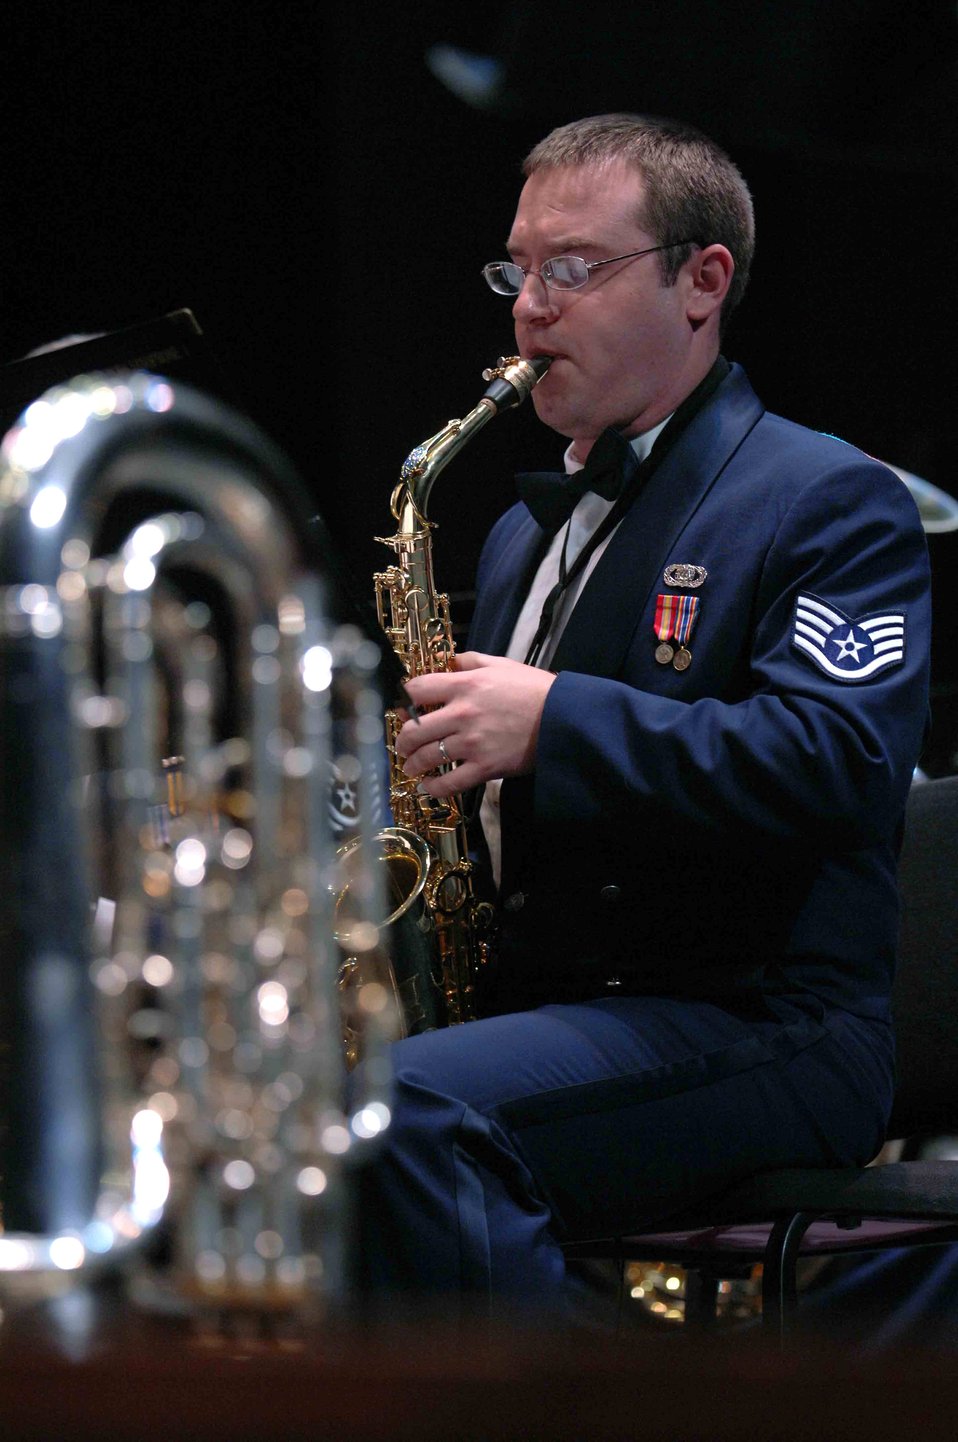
Music to their ears

Staff Sgt. Nathan Drabek plays the saxophone during an Oct. 17 performance at the University of Nevada Las Vegas. Sergeant Drabek is a member of the Air Force Band of the Golden West. The Band of the Golden West, from Travis Air Force Base, Calif., is the only active duty Air Force band west of the Rocky Mountains. They are scheduled to perform five free concerts in the Las Vegas community. The band supports 10 active duty Air Force bases, five Air Force Reserve wings and five recruiting squadrons in California, Washington, Oregon, Idaho and Nevada with more than 500 annual performances.